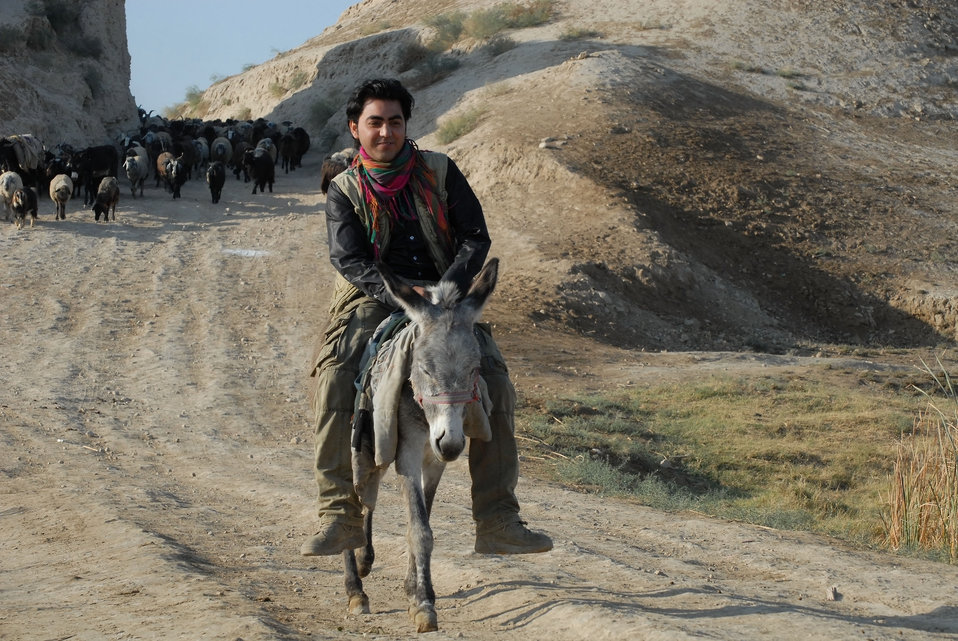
'On the Road' in Balkh Province